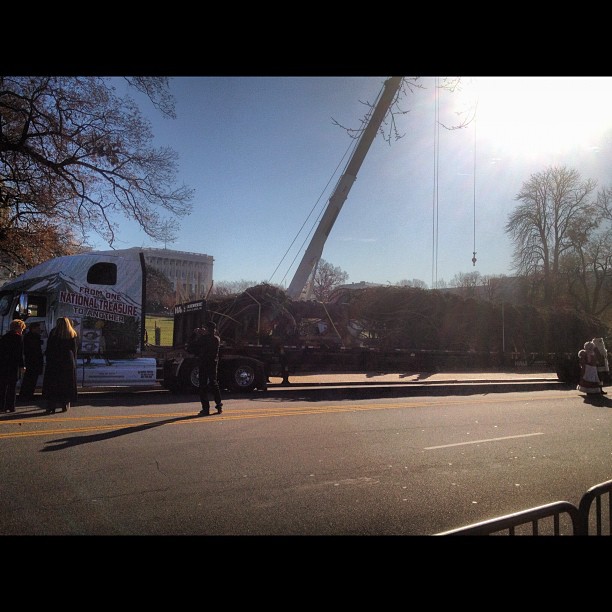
Capitol Tree has arrived.